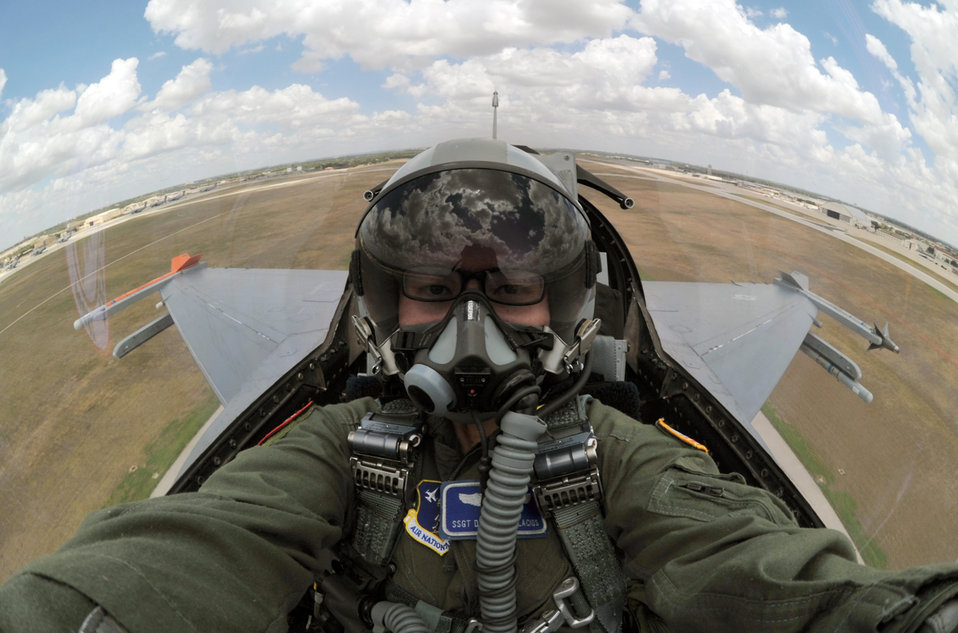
Up, up and away!

Staff Sgt. Desiree N. Palacios takes a self portrait Aug. 18 as an F-16 Fighting Falcon takes off on a training mission in San Antonio. Sergeant Palacios flew with the Texas Air National Guard's 149th Fighter Wing at Lackland Air Force Base, Texas. Sergeant Palacios is an aerial photojournalist assigned to the Defense Media Activity - San Antonio.